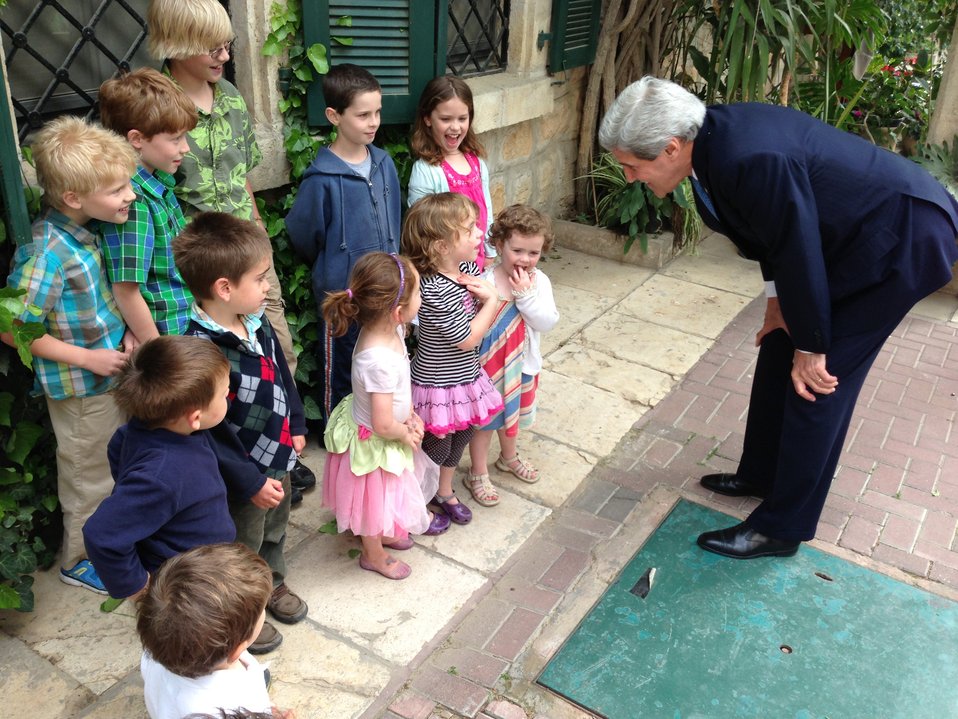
Secretary Kerry Meets With Consulate Jerusalem Families

U.S. Secretary of State John Kerry meets the children of the staff at the U.S. Consulate General in Jerusalem on April 8, 2013.